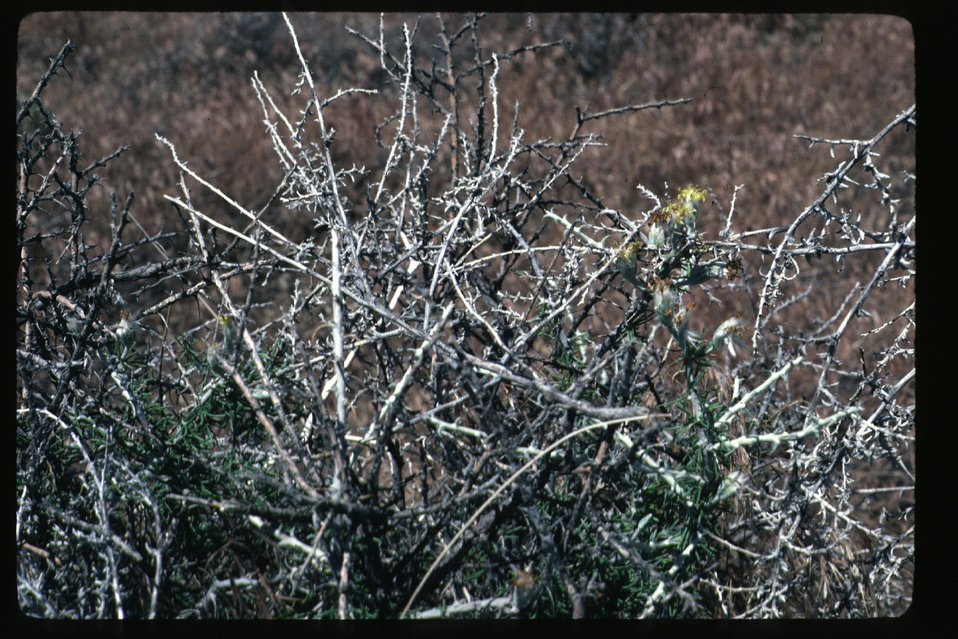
Tetradymia canscendens Brush, grasses Wildflower